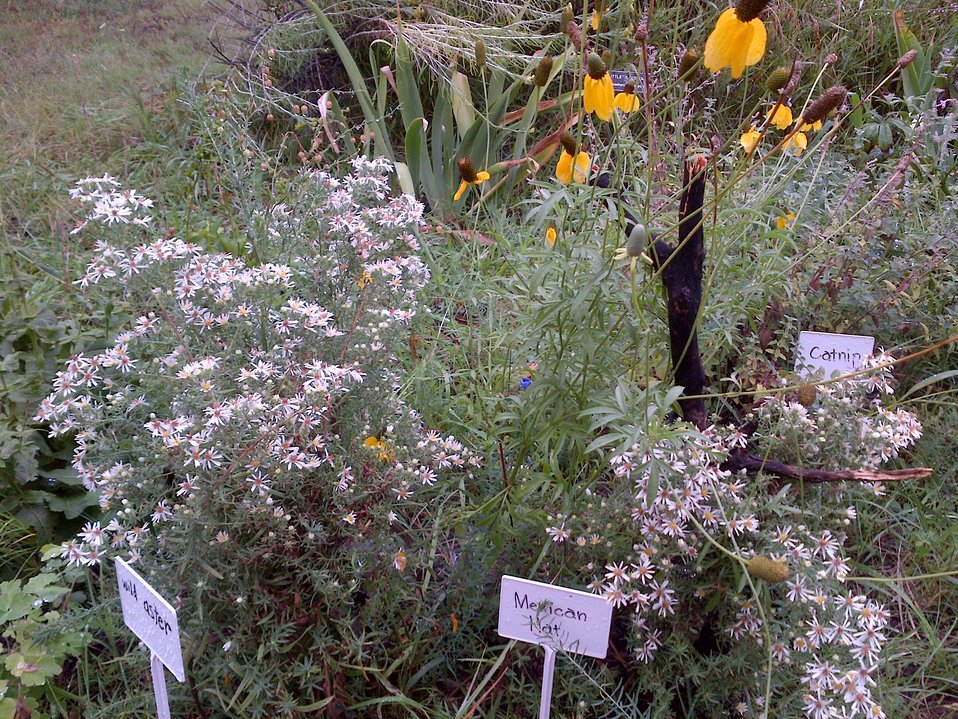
Sign - Praire Plants